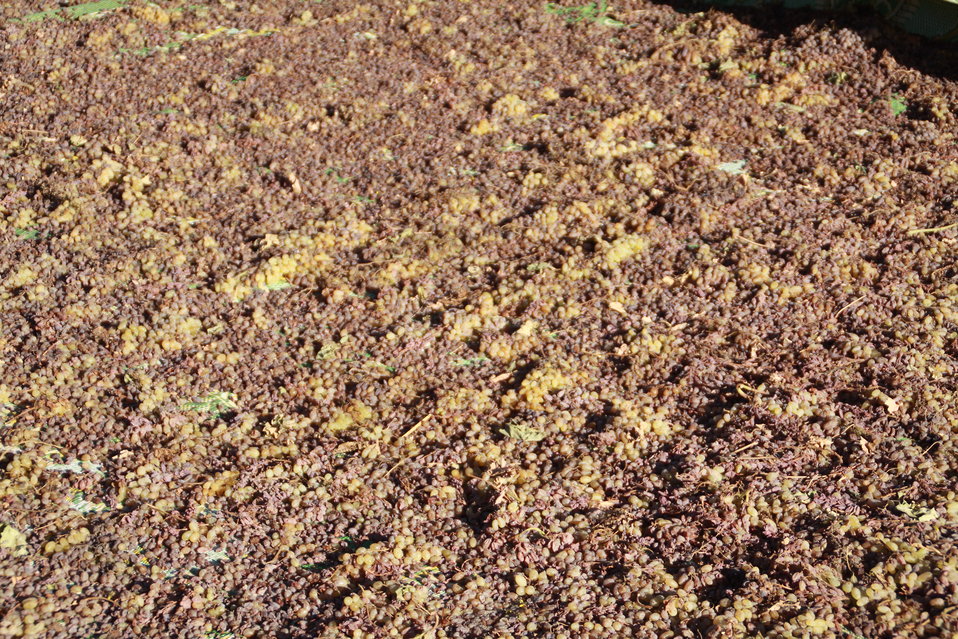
AVIPA Plus Wheat Seed Distribution 101005

US Ambassador Karl Eikenberry and USAID Acting Mission Director Kevin Brownawell joined the Minister of Agriculture, Irrigation and Livestock, H.E. Minister Mohammed Rahimi in signing a Memorandum of Understanding and distributing vouchers to area farmers for wheat and fertilizer.